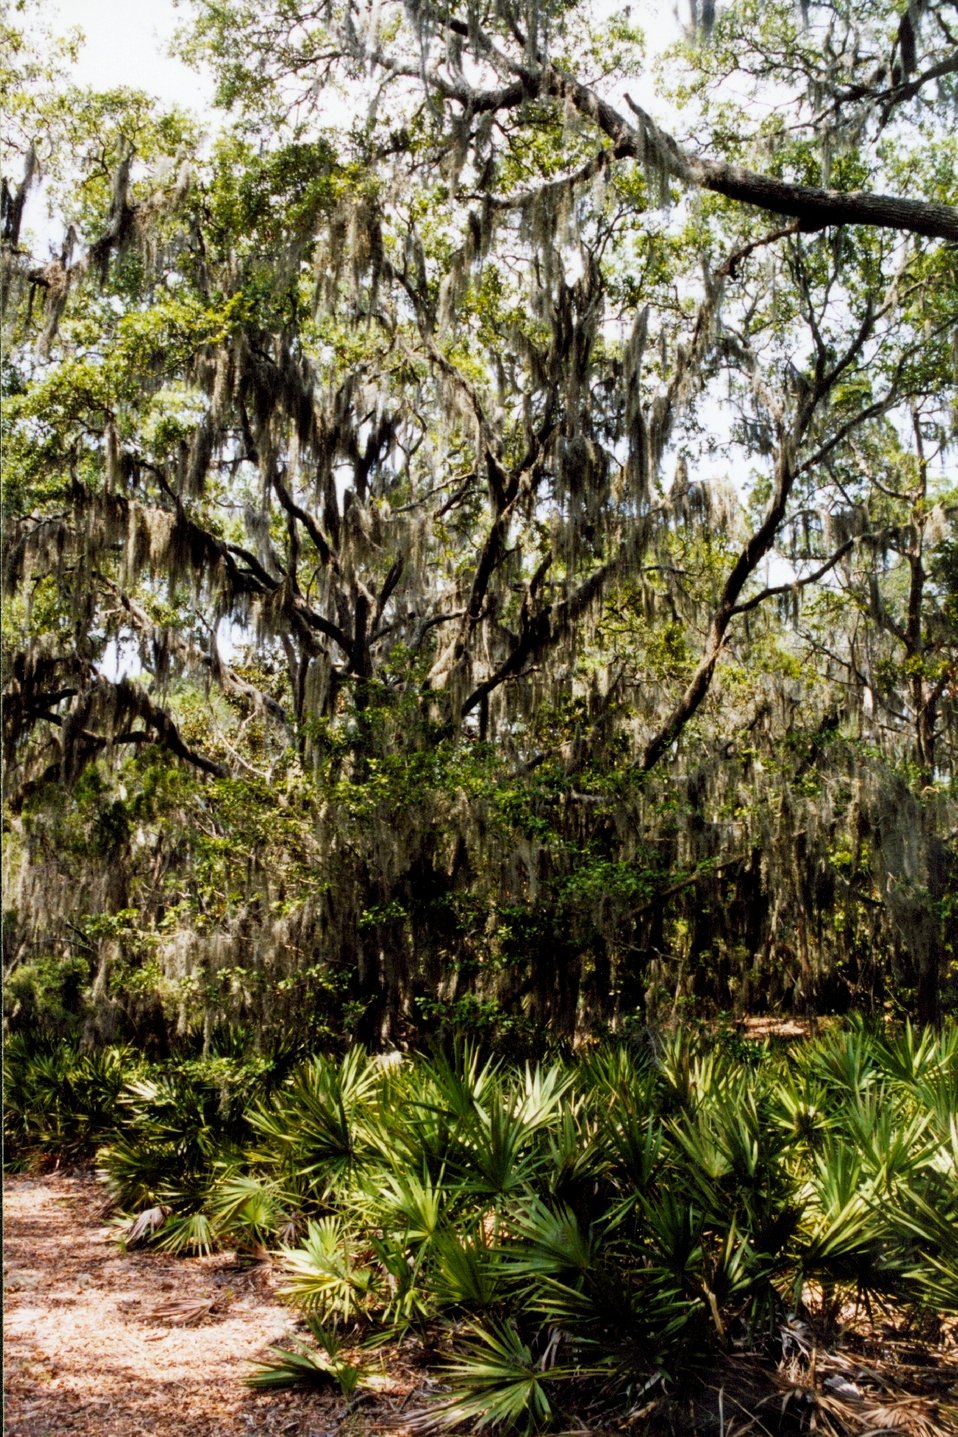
A surreal view of spanish moss covered trees and palmetto ground cover.